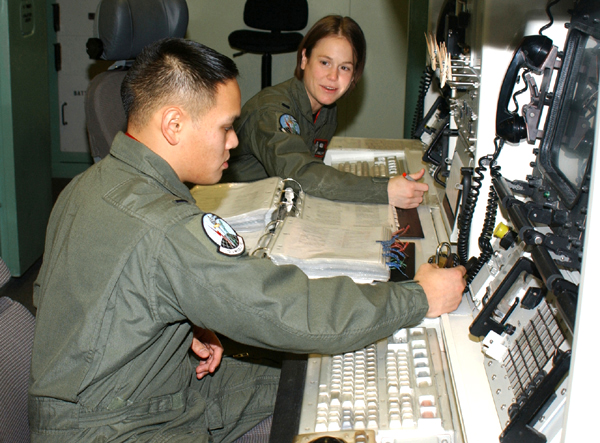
Malmstrom Airman gives gift of life

MALMSTROM AIR FORCE BASE, Mont. -- First Lts. Janelle Rust (rear) and Johann Peralta are missile officers assigned to the 12th Missile Squadron here. Lieutenant Rust donated bone marrow to a 3-year-old girl and said she now plans to coordinate an awareness drive here for the donation program.